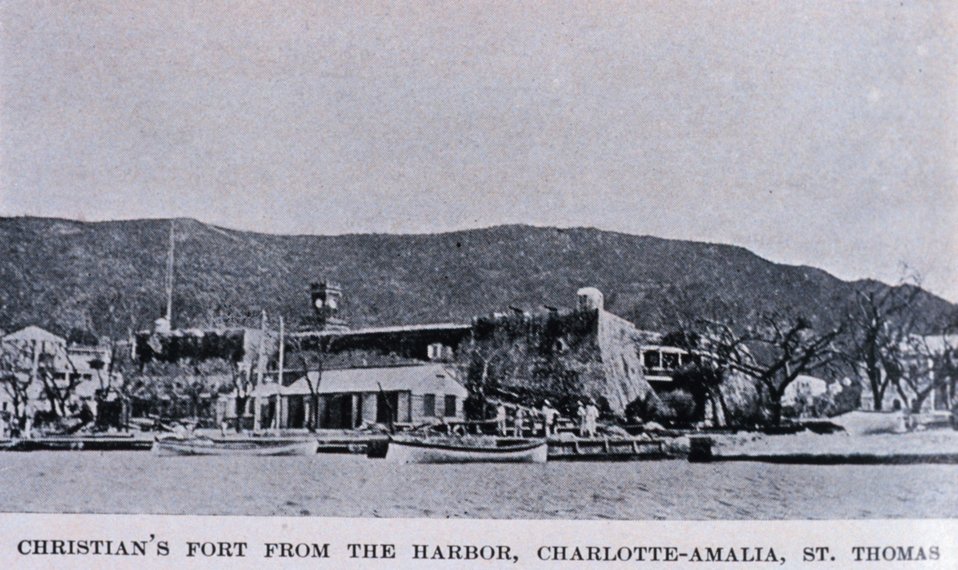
'Christian's Fort from the Harbor, Charlotte-Amalia, St. Thomas.' In: 'The Virgin Islands Our New Possessions and the British Islands', by Theodoor De Booy and John T. Faris, 1918. J. B. Lippincott and Company, Philadelphia. P. 31. Library Call Number C/hc100 V81 B.